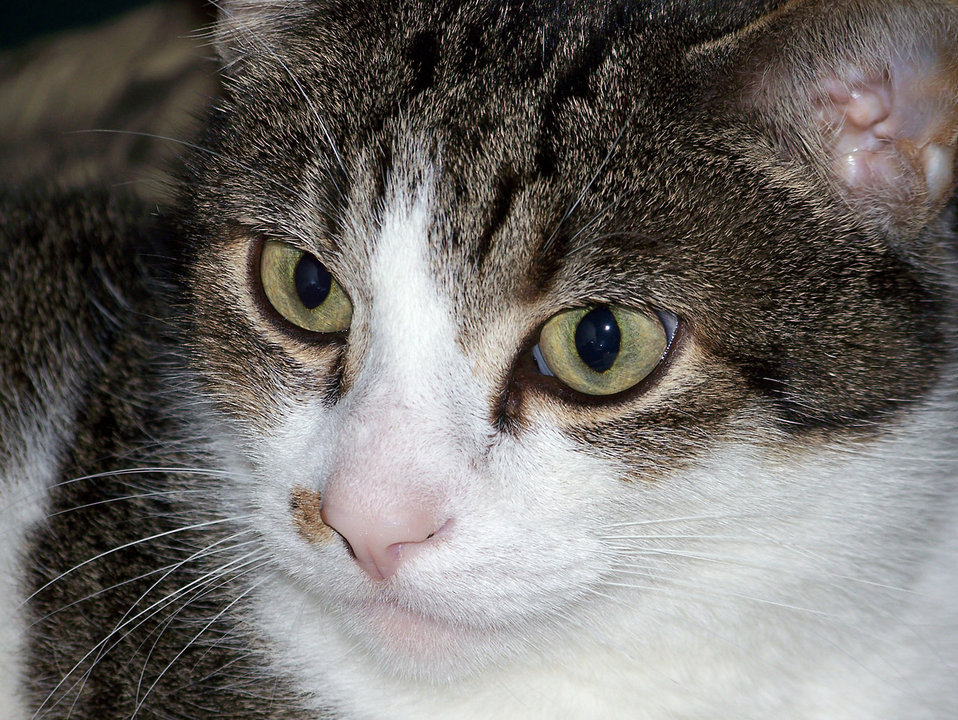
Interested cat

The cat is interested in something.